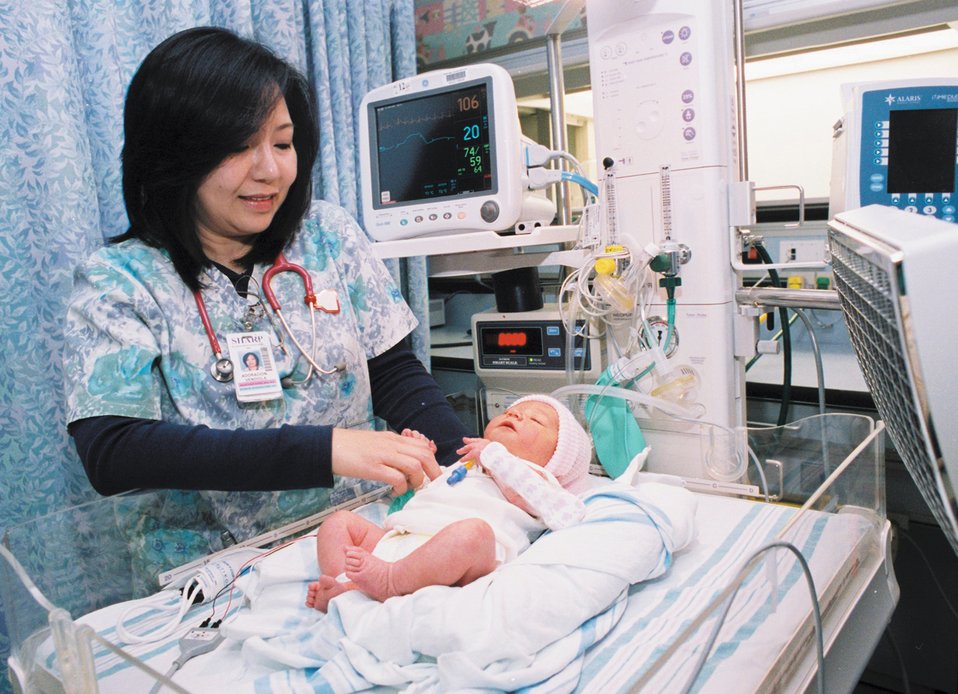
2007 Baldrige Award, Sharp HealthCare

2007 Malcolm Baldrige National Quality Award, Healthcare, Recipient Profile